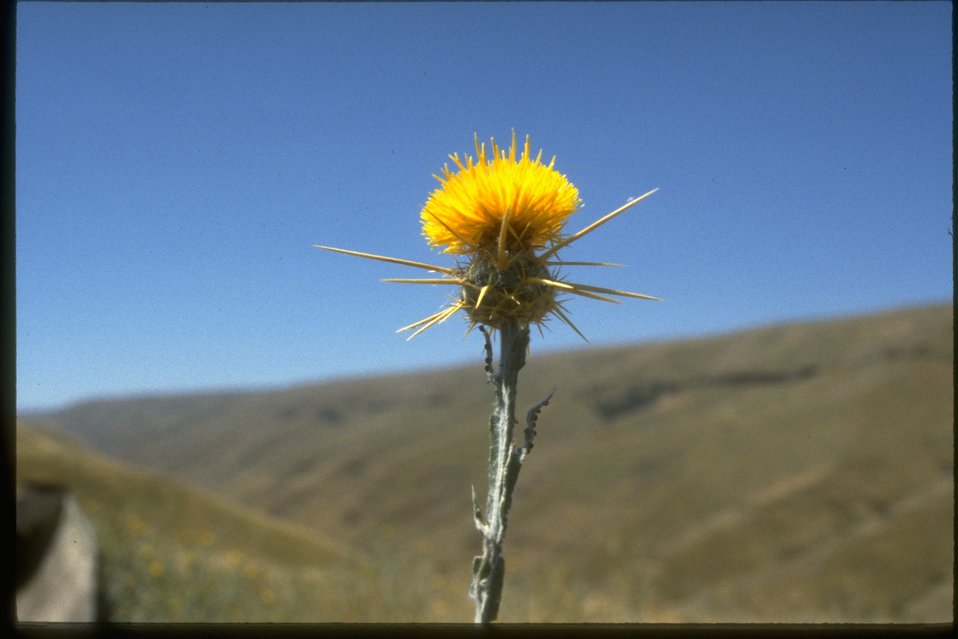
Seed head of Yellow Starthistle.